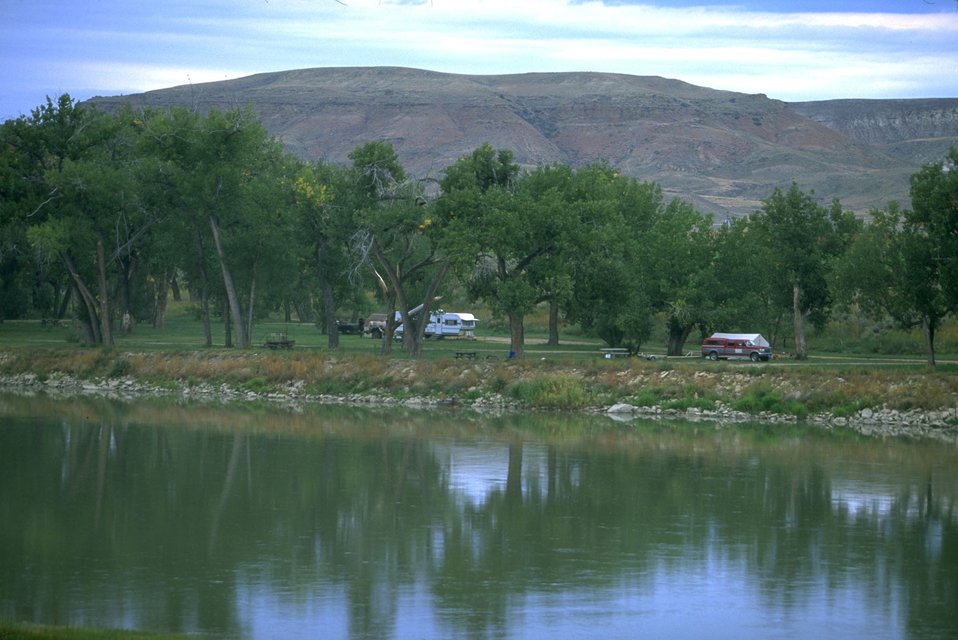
Judith Landing campground on Upper Missouri River